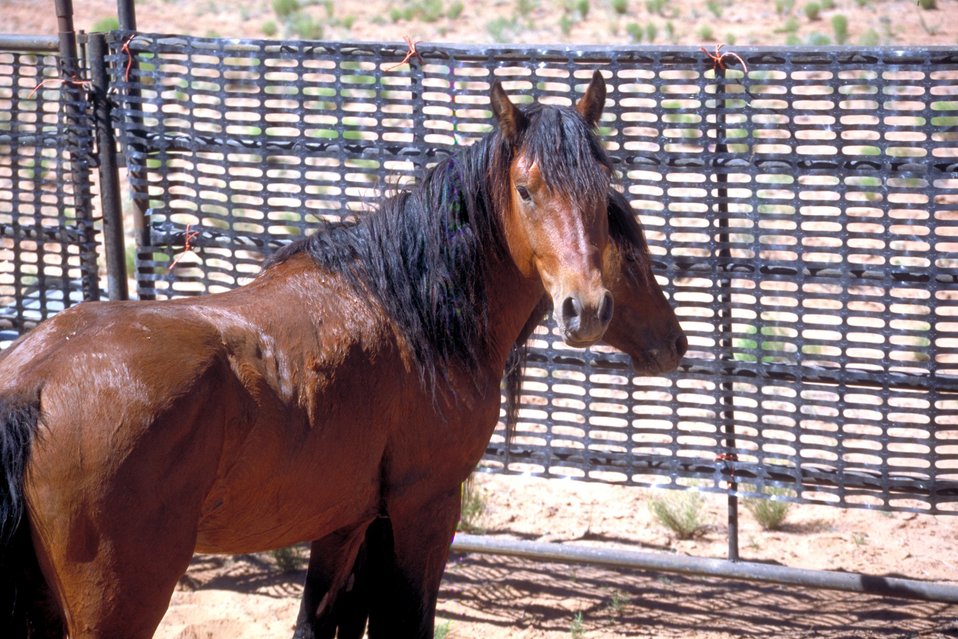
Wild horse gather, San Rafael Swell.